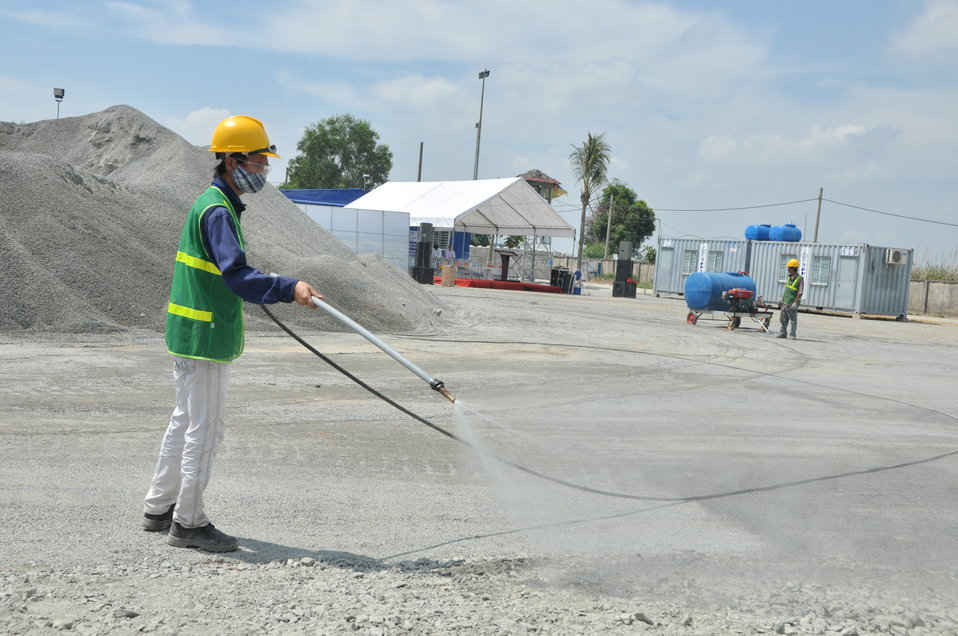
Media Tour of Environmental Remediation of Dioxin Contamination at Danang Airport

Danang, Vietnam
April 24, 2013